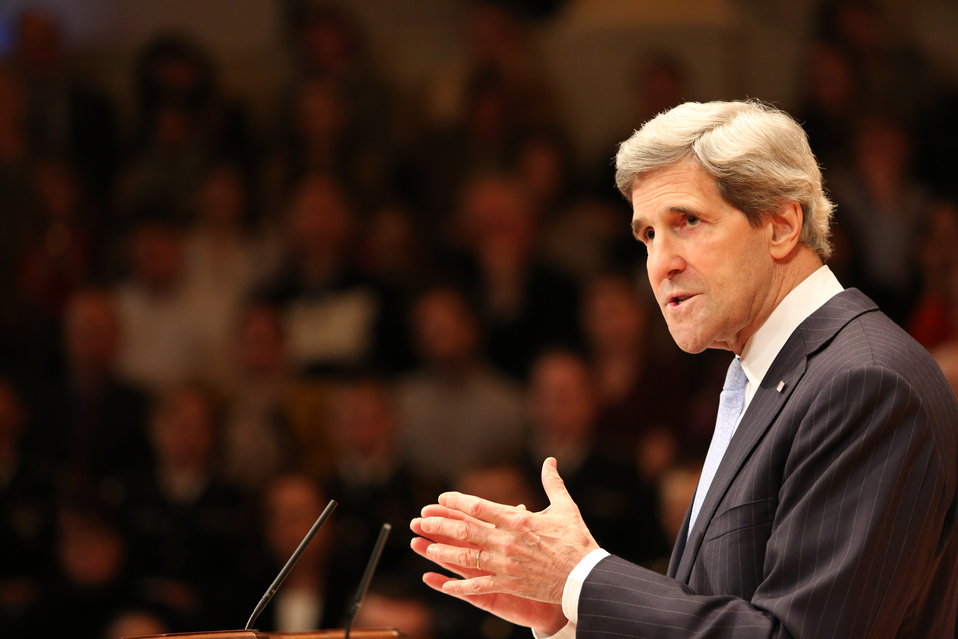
Secretary Kerry Delivers Remarks at UVA

U.S. Secretary of State John Kerry delivers remarks at the University of Virginia in Charlottesville, Virginia, February 20, 2013.